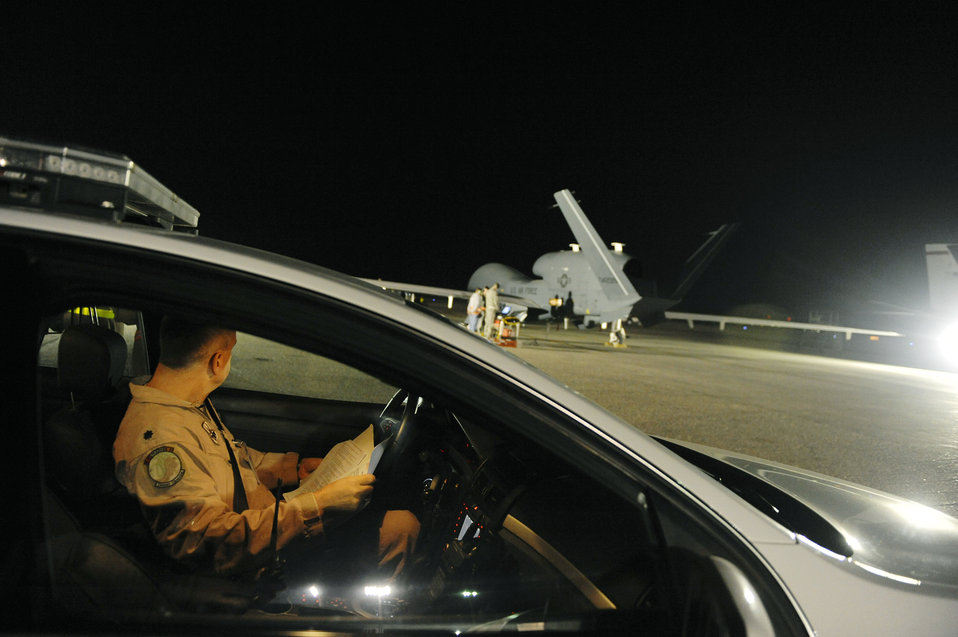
Hawk Eye

A lieutenant colonel from the 99th Expeditionary Reconnaissance Squadron waits in his vehicle before an EQ-4 Global Hawk's first launch Nov. 29, 2010, in Southwest Asia. The EQ-4 and other Global Hawk platforms use a chase vehicle to ensure the aircraft takes off successfully.